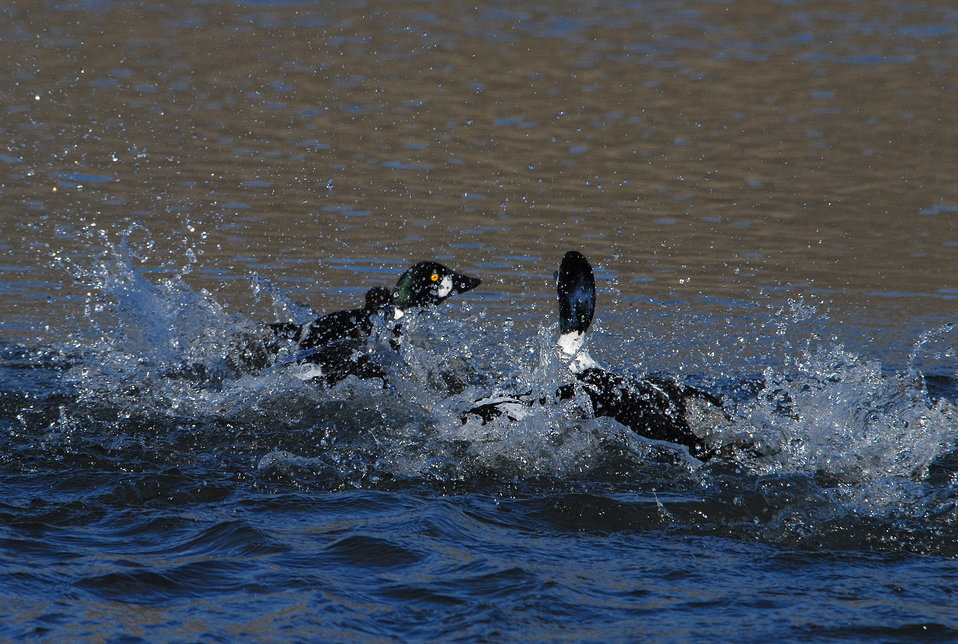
Barrow's and Common Goldeneye (male)